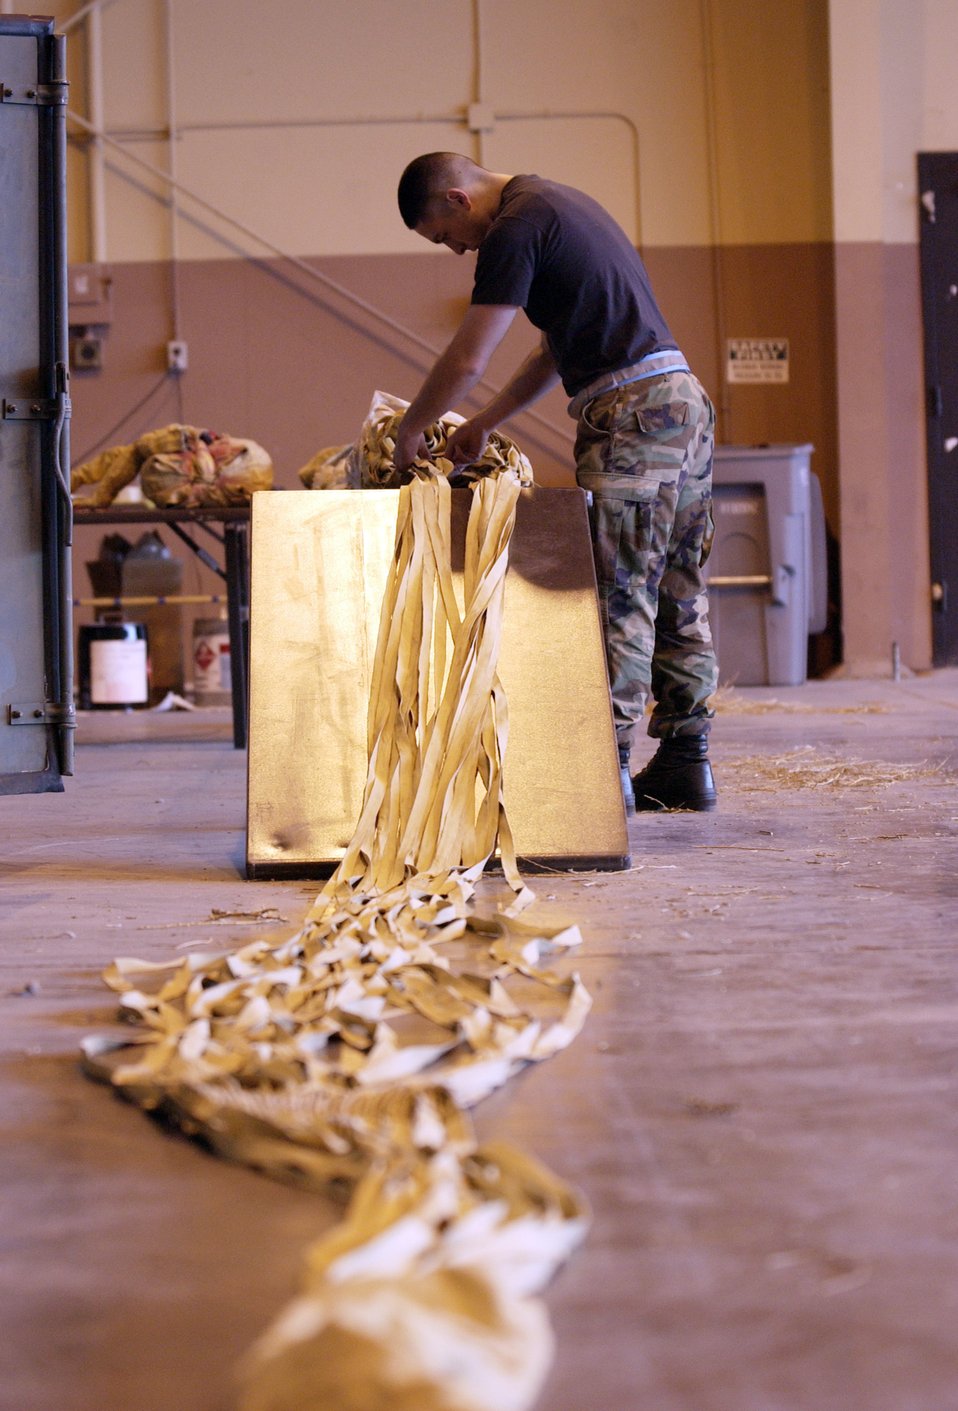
Red Flag

NELLIS AIR FORCE BASE, Nev. (AFPN) -- Senior Airman Daniel Desfassiaux inspects and repacks an F-117A Nighthawk deceleration parachute Jan. 25 during Red Flag 06-1 here Jan. 21 to Feb. 18. Red Flag tests fliers' war-fighting skills in realistic combat situations. Flights involve more than 80 aircraft, including B-2 Spirit bombers and F-16 Fighting Falcons. The aircraft will fly missions day and night at the nearby Nevada Test and Training Range. Along with the Air Force, units are participating from the Army, Navy, Marine Corps, United Kingdom and Australia. Airman Desfassiaux is a survival equipment journeyman with the 9th Fighter Squadron at Holloman Air Force Base, N.M.